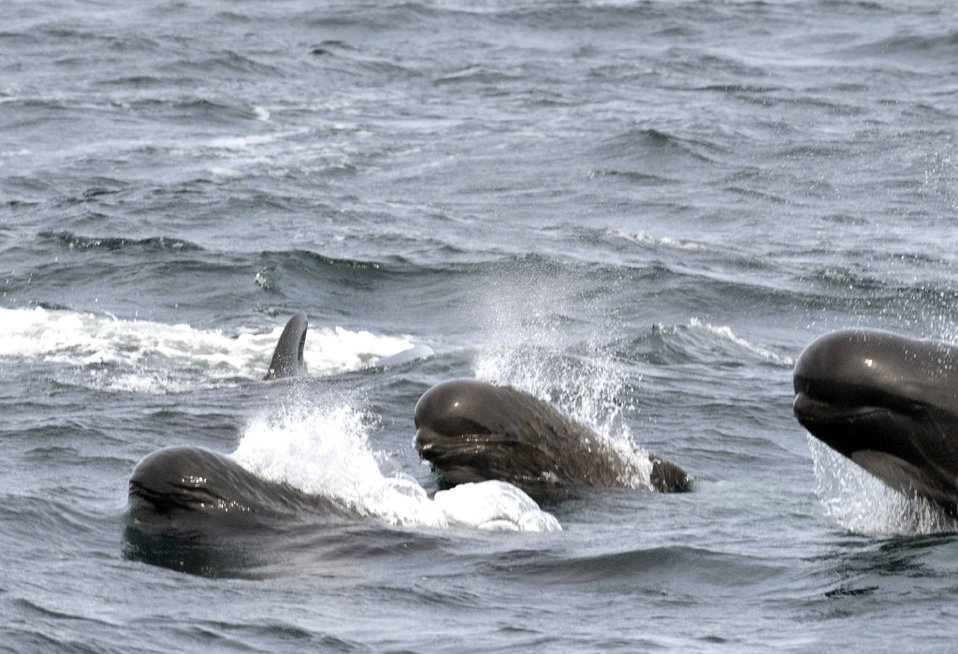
Photo of the Week - Long-finned Pilot Whales (RI)

Long-finned Pilot Whales photographed southeast of Block Island, RI.